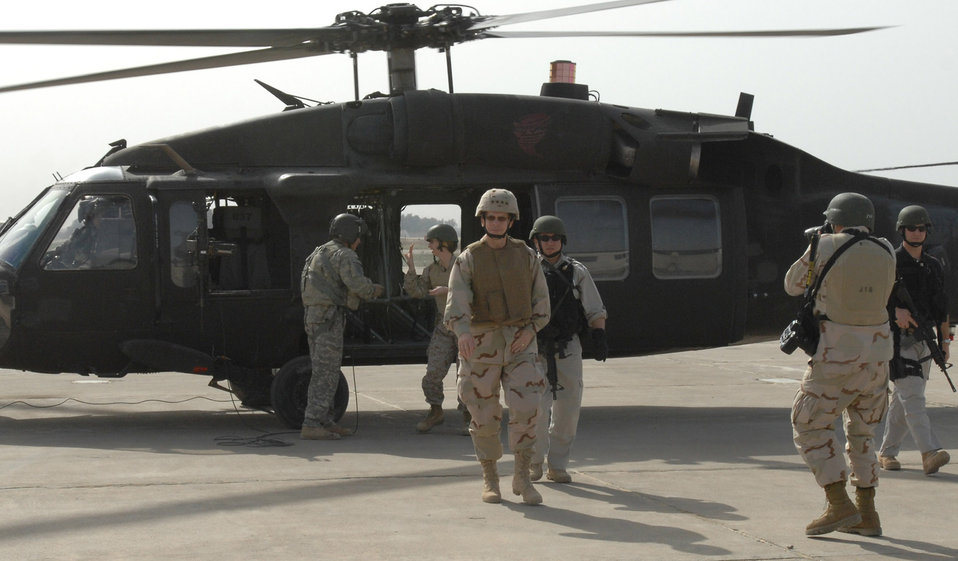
Joint Chiefs chairman visits servicemembers in Kirkuk

Chairman of the Joint Chiefs of Staff Navy Adm. Mike Mullen arrives March 2 at Kirkuk Air Base, Iraq. The highest ranking military officer attended meetings with the State Department Provincial Reconstruction Team, presided over a short promotion ceremony for two Army officers and had dinner with several Airmen and Soldiers during his visit.